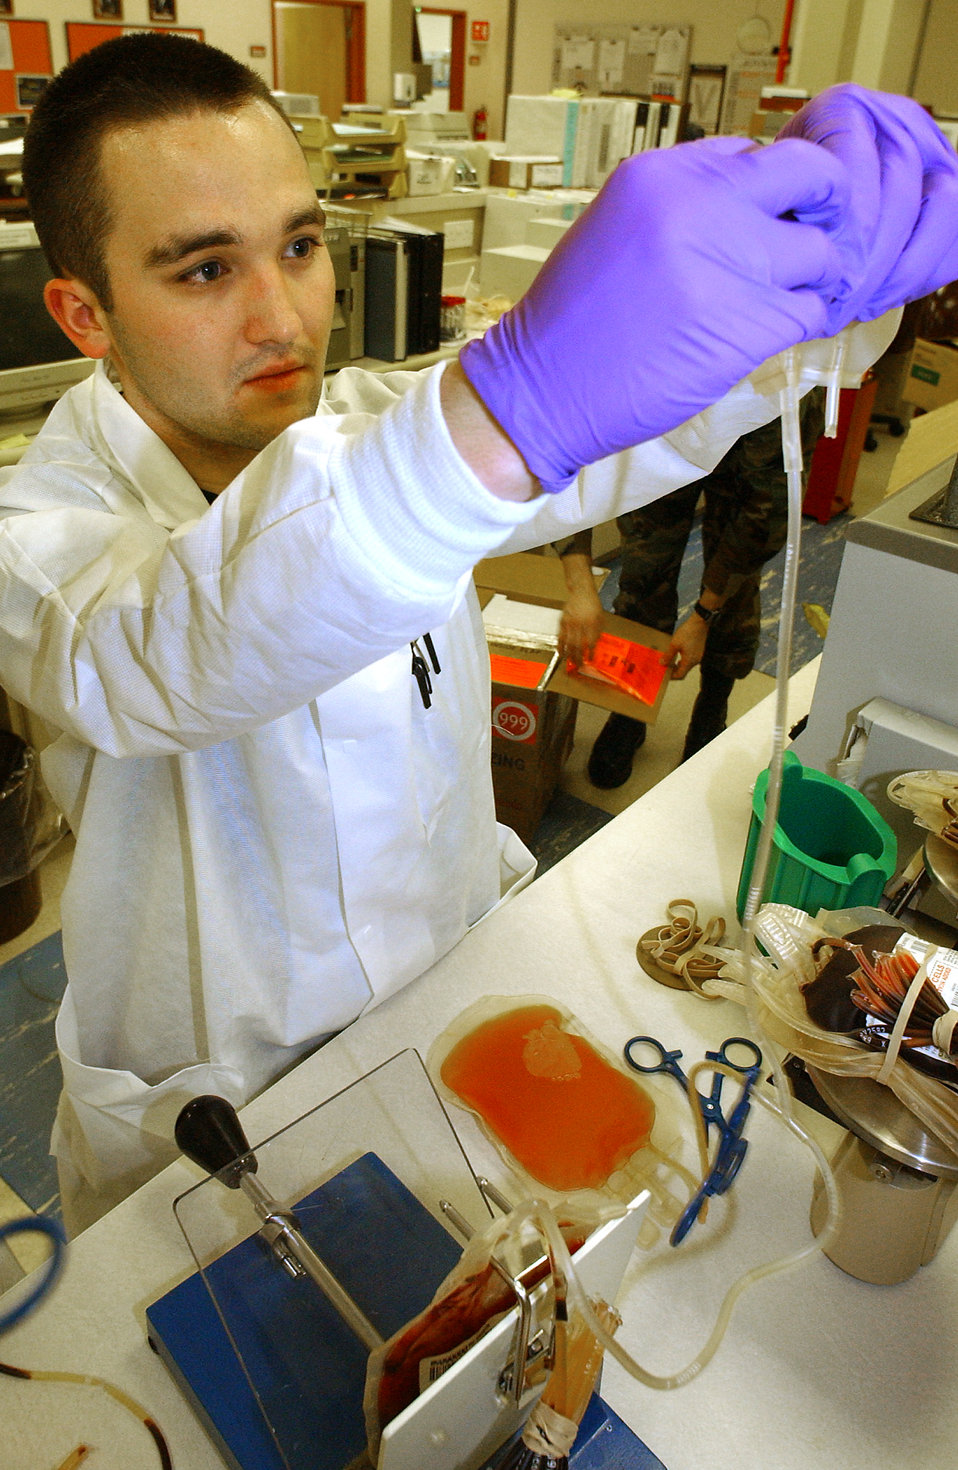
It's a bloody job...

ROYAL AIR FORCE MILDENHALL, England -- Airman 1st Class Joshua Barnett squeezes a preservative solution into a bag of red blood cells so they are good for 42 days. The blood came from donors during a monthly blood drive. Airman Barnett is assigned to the 48th Medical Support Squadron.